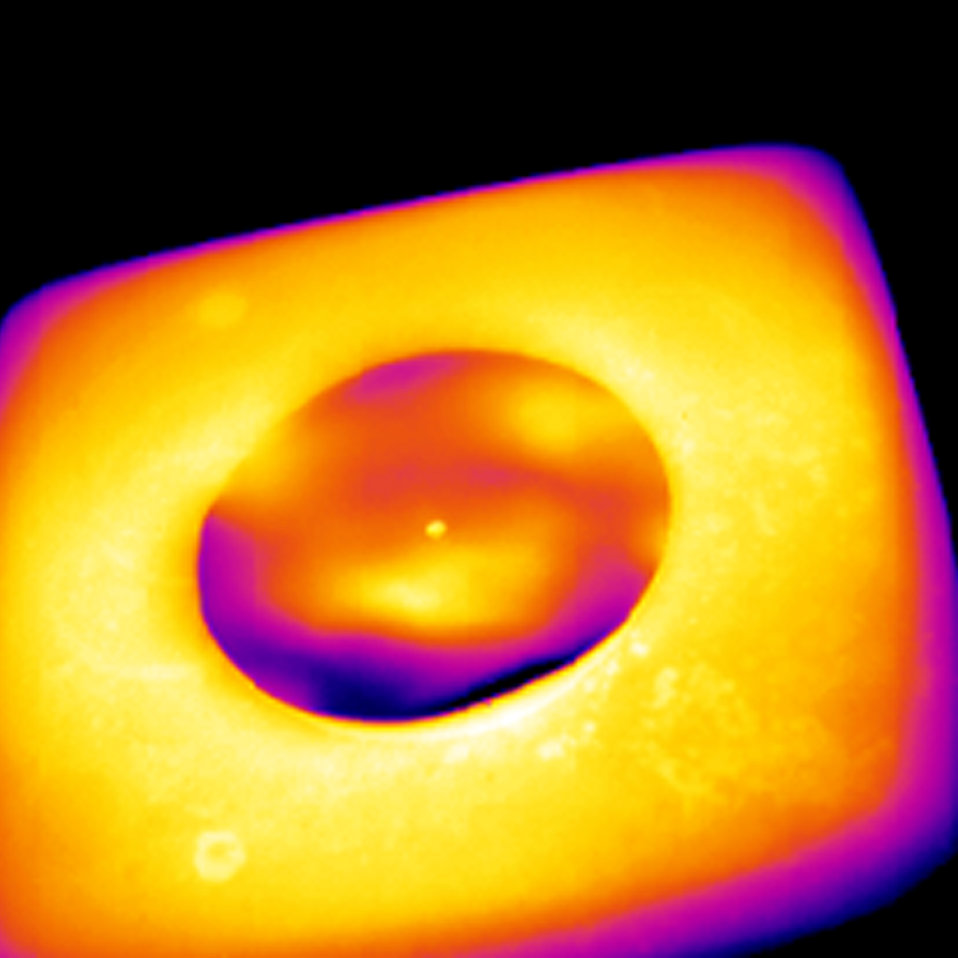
Explosive Hot Pad

An infrared image shows temperature variations as a round swipe cloth is heated to vaporize any explosive particles that may be present. Black/deep purple areas are about 40 degrees C, while yellow/white areas are about 200 degrees C. NIST chemists are developing standards and calibration services to help optimize equipment used at airports and other venues for detecting explosive materials.